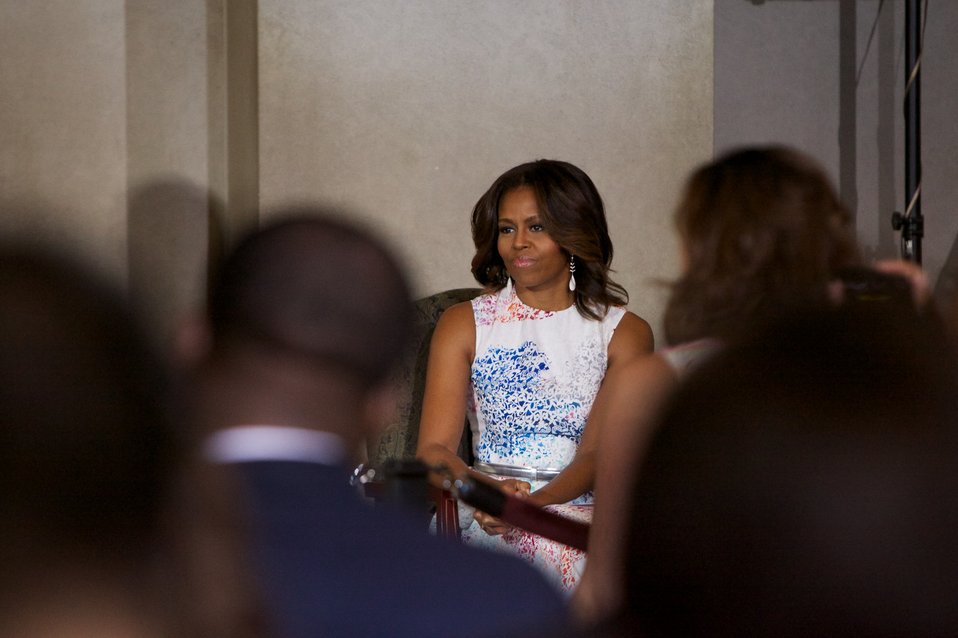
Naturalization Ceremony with Michelle Obama